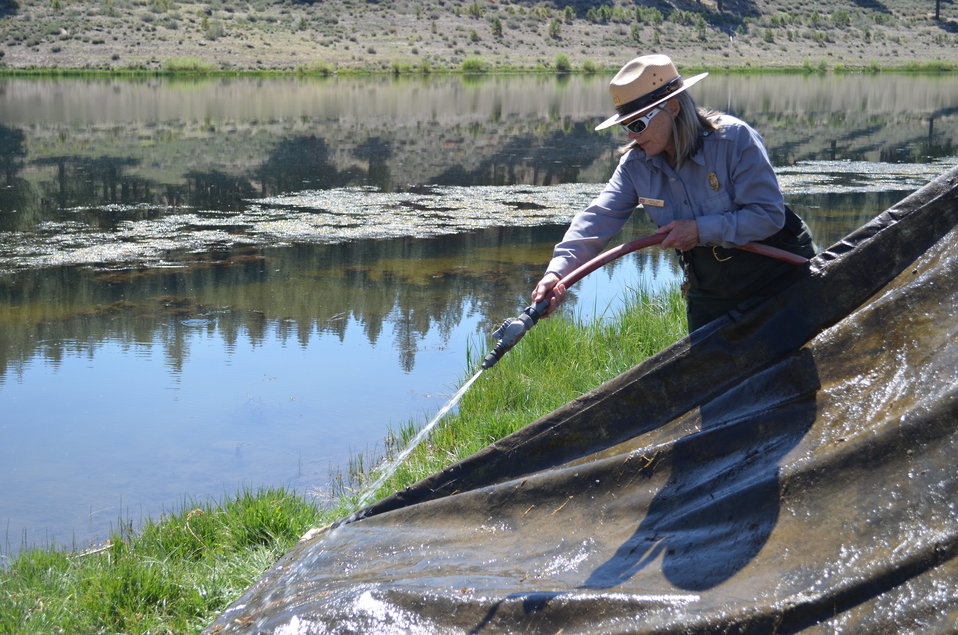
Corps fights invasive weeds at Martis Creek Lake

Sacramento District park ranger, Jacqui Zink, cleans a weed barrier from Martis Creek Lake in Truckee, Calif., during a removal, cleaning and replacement project May 19, 2012. The gas-permeable barriers kill invasive plants by blocking sunlight, but don't disturb other plant and animal species. The U.S. Army Corps of Engineers and Tahoe Divers Conservancy have teamed up to sustainably eradicate invasive milfoil at the lake, managed by the Corps’ Sacramento District.